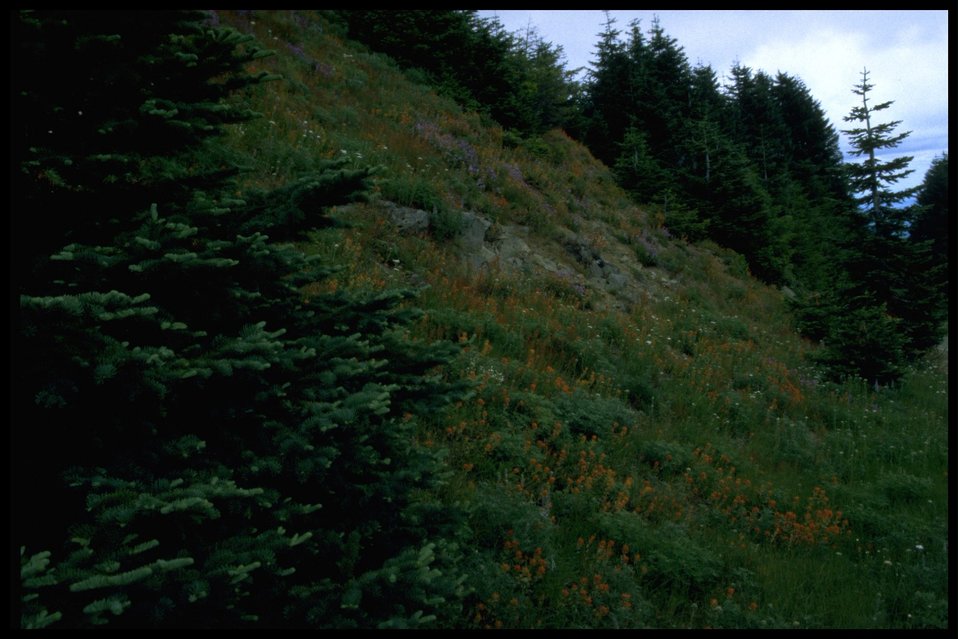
Wide shot of rock garden atop Mary's Peak.